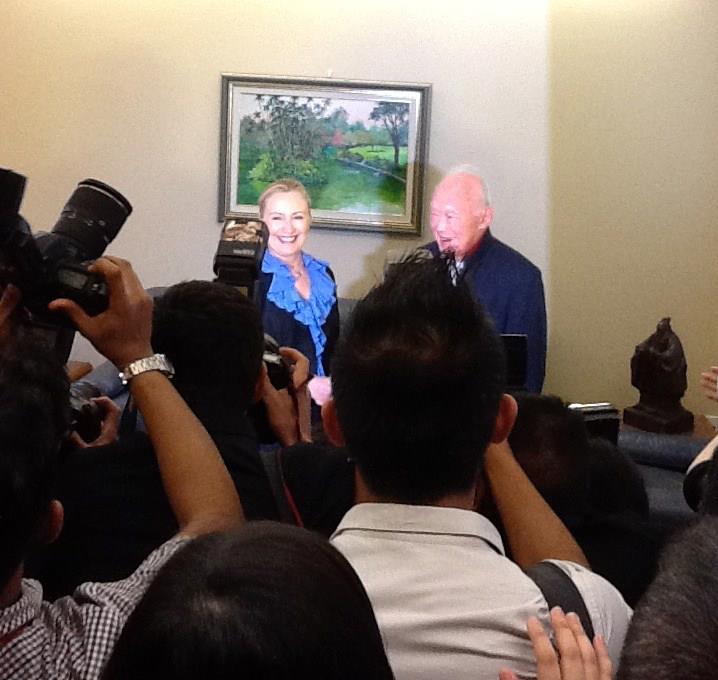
Secretary Clinton Meets Wtih Former Singaporean Prime Minister Lee Kuan Yew

U.S. Secretary of State Hillary Rodham Clinton meets with former Singaporean Prime Minister Lee Kuan Yew in Singapore, November 17, 2012.